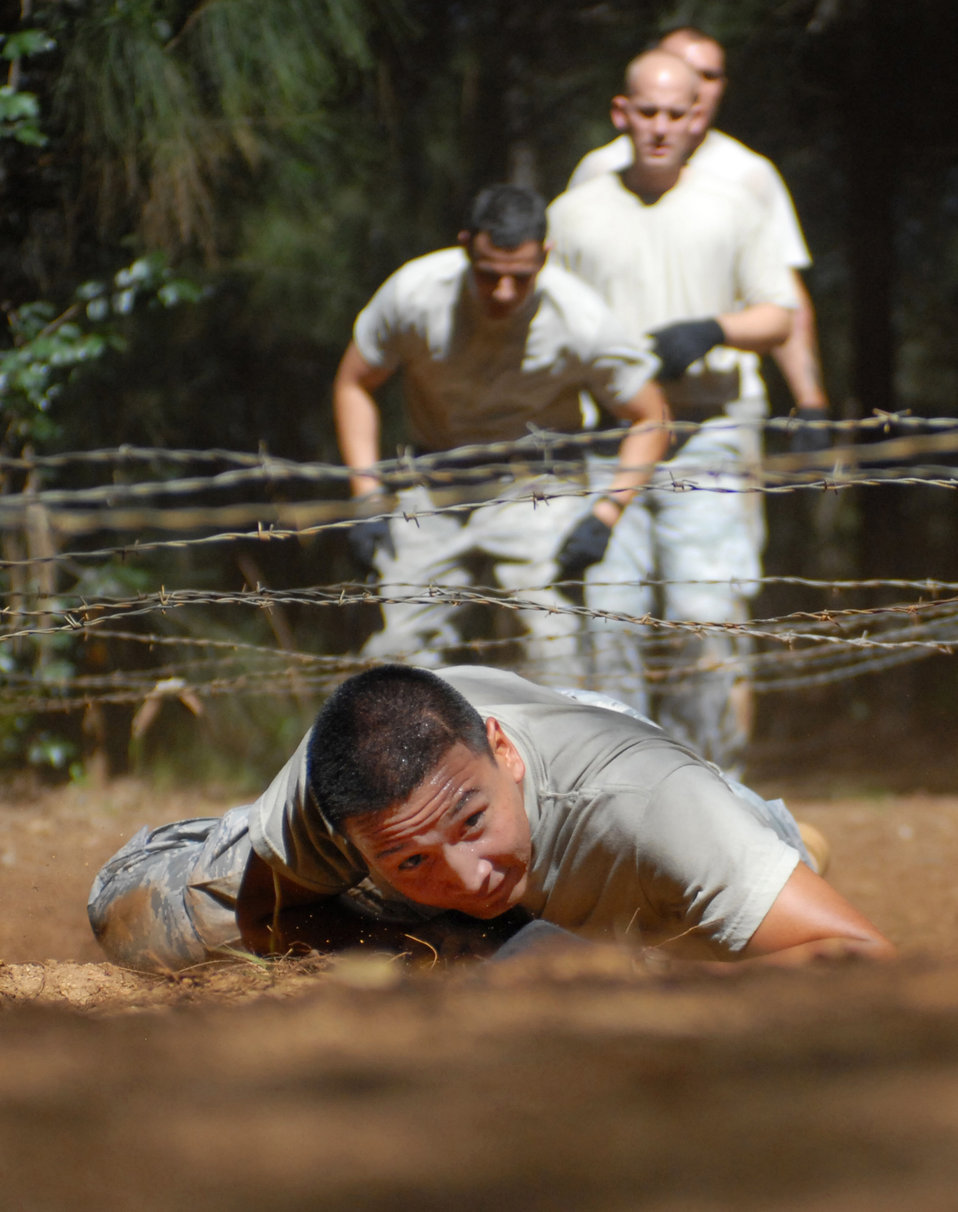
Airmen vie for slots in Army Air Assault course

Senior Airman Anthony Elizondo, a 647th Security Forces Squadron Airman from Joint Base Pearl Harbor-Hickam, Hawaii, low crawls under barbed wire as part of an obstacle course Feb. 1, 2011, in Wahiawa, Hawaii. Sixteen security forces members are trying out to attend a two-week Army Air Assault Course beginning May 5, 2011.